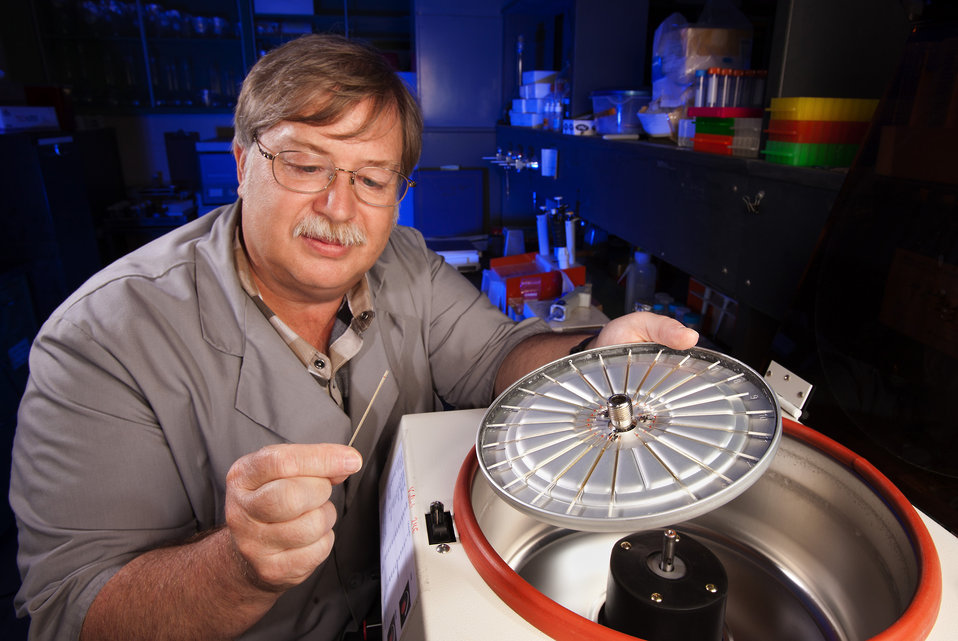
U.S. Department of Agriculture (USDA) Agricultural Research Service (ARS) technician Mike Judy loads immunoglobulin immunocrit tubes into a centrifuge on Nov. 1, 2003. After centrifugation, the immunocrit measurement is easily made with a metric ruler.